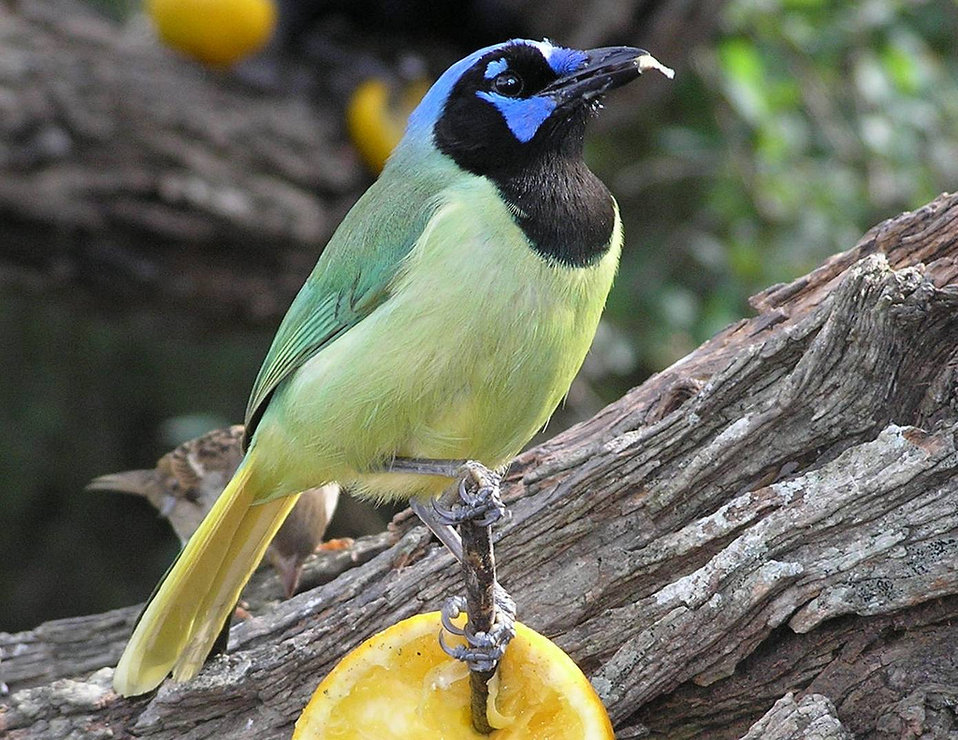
Laguna Atascosa National Wildlife Refuge, TX

A green jay eats an orange at a feeding station near the visitor center door.